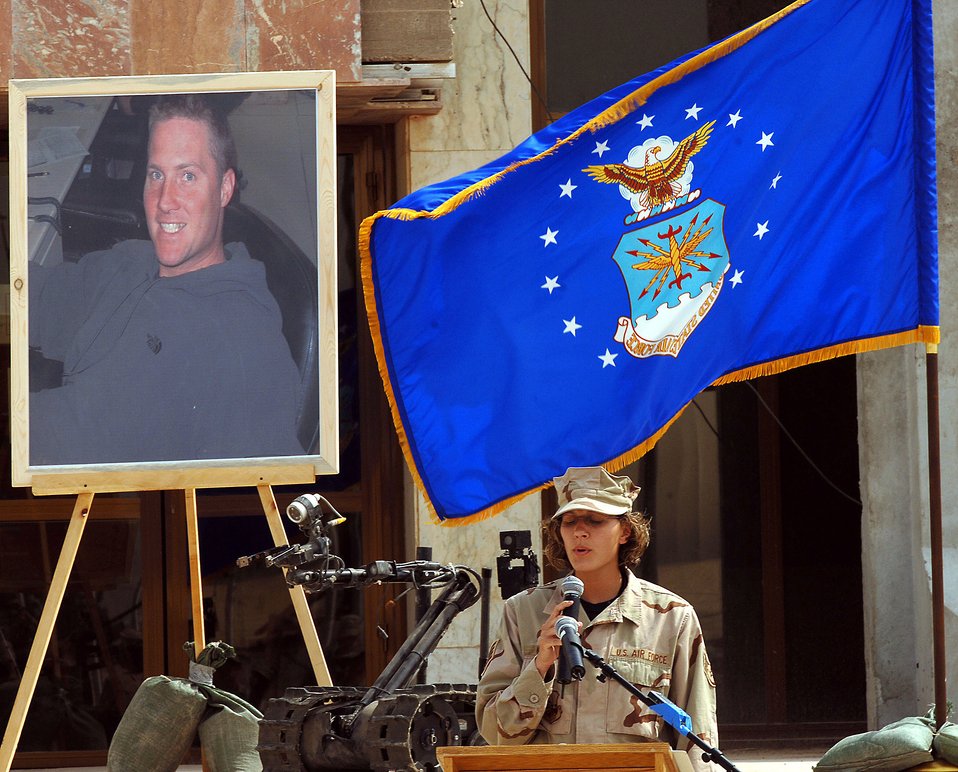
Memorial held for Airman killed in Operation Iraqi Freedom

Staff Sgt. Sevina Watson sings